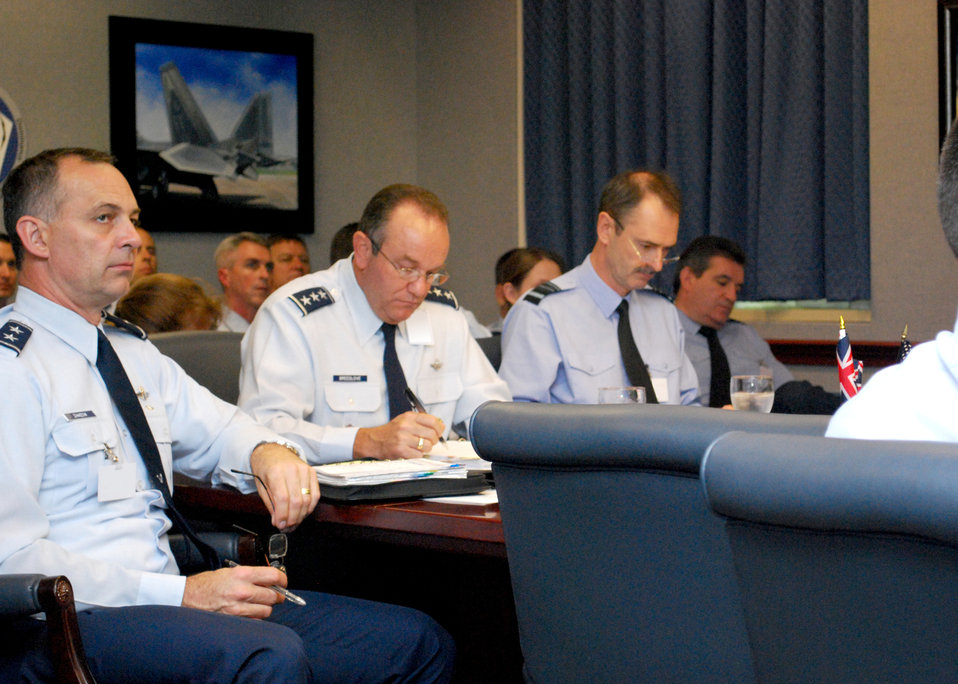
CVF 10-4

Lt. Gen. Philip Breedlove and Air Marshal Richard Garwood came together in the Pentagon's Warfighter Capability Demonstration Center to discuss their continued encouragement of coalition play in synthetic training and distributed mission operations. Their discussion centered on live feeds from the training exercise Coalition Virtual Flag 10-4 at Kirtland AFB. General Breedlove is the Air Force Deputy Chief of Staff for Operations, Plans and Requirements and Air Marshal Garwood is the Royal Air Force Deputy Commander-in-Chief Operations.